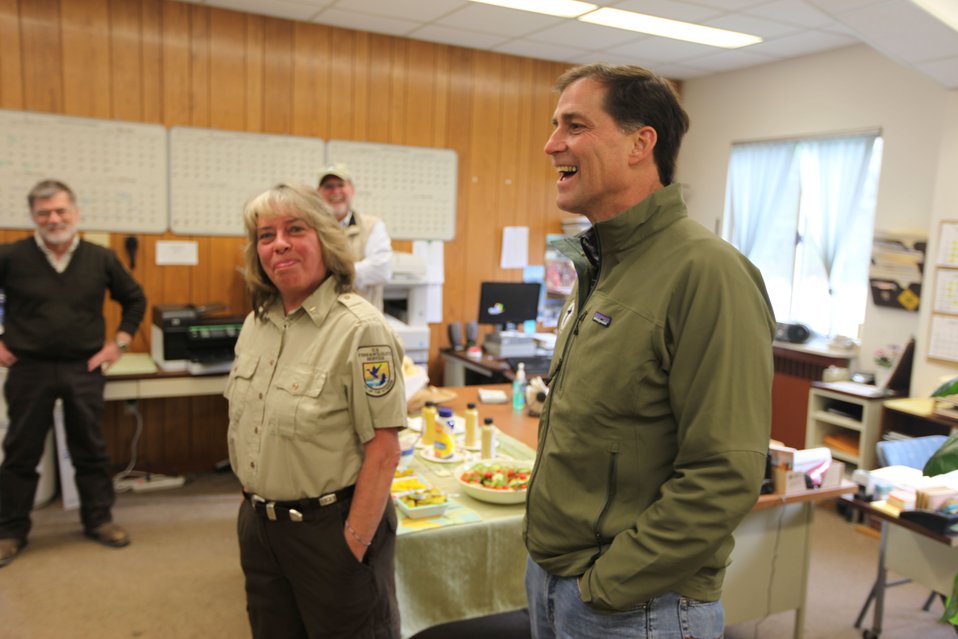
Dan Ashe & Judy Romero

U.S. Fish & Wildlife Service Director Dan Ashe visits the Northeast Region
for a tour of the White River National Fish Hatchery in Bethel, Vermont on
April 27, 2012. The hatchery was devastated by Tropical Storm Irene and
Dan Ashe had the chance to meet and thank the staff for their heroic work.
Director Ashe also visited restoration/flood response/fish passage project
sites in Rochester, Vermont and met with local officials and staff from the
White River Partnership.